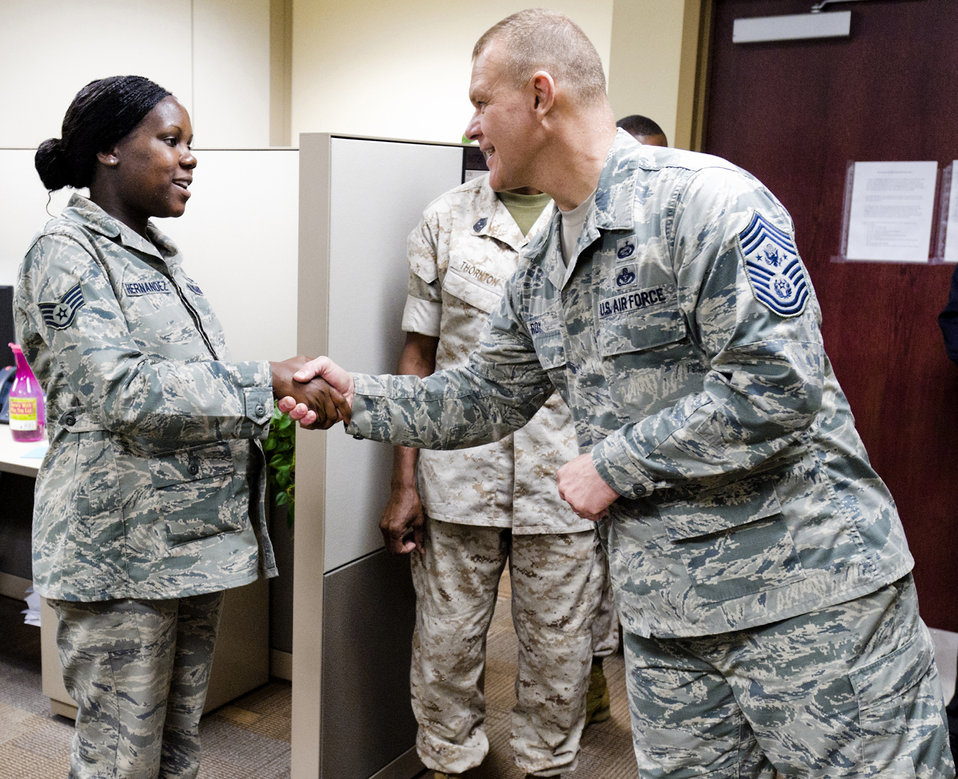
Chief Roy

Chief Master Sergeant of the Air Force James A. Roy shakes hands with Staff Sgt. Kionna Hernandez July 11, 2011, at the Air Force Office of Special Investigations headquarters at Marine Corps Base Quantico, Va. Sergeant Hernandez is an AFOSI support staff member.